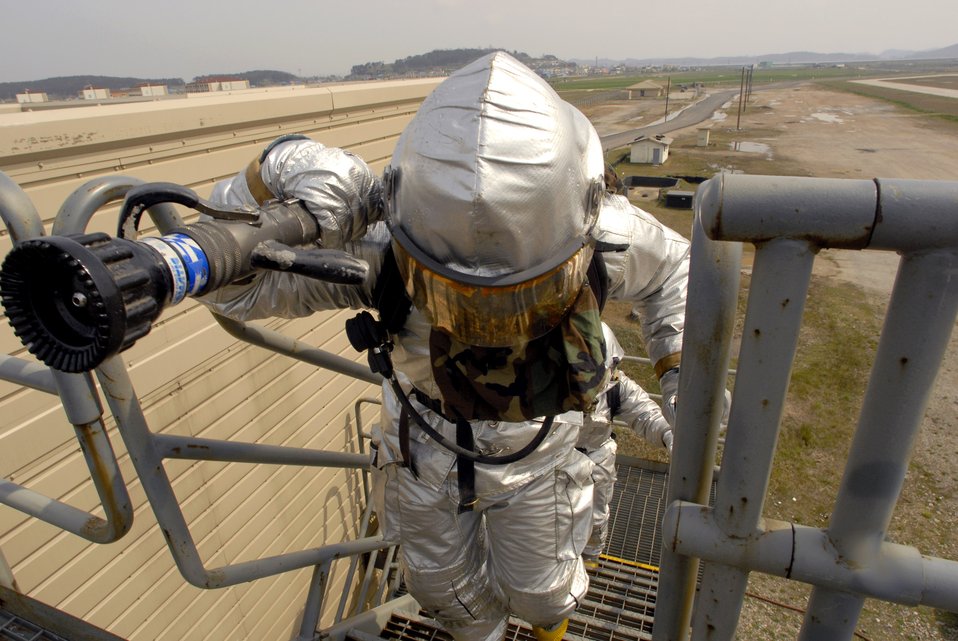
Into the fire

Senior Airman James Lionel climbs stairs to respond to a simulated fire during an operational readiness inspection April 17 at Kunsan Air Base, South Korea. The base was undergoing an operational readiness inspection to test the 8th Fighter Wing's ability to conduct its wartime mission.